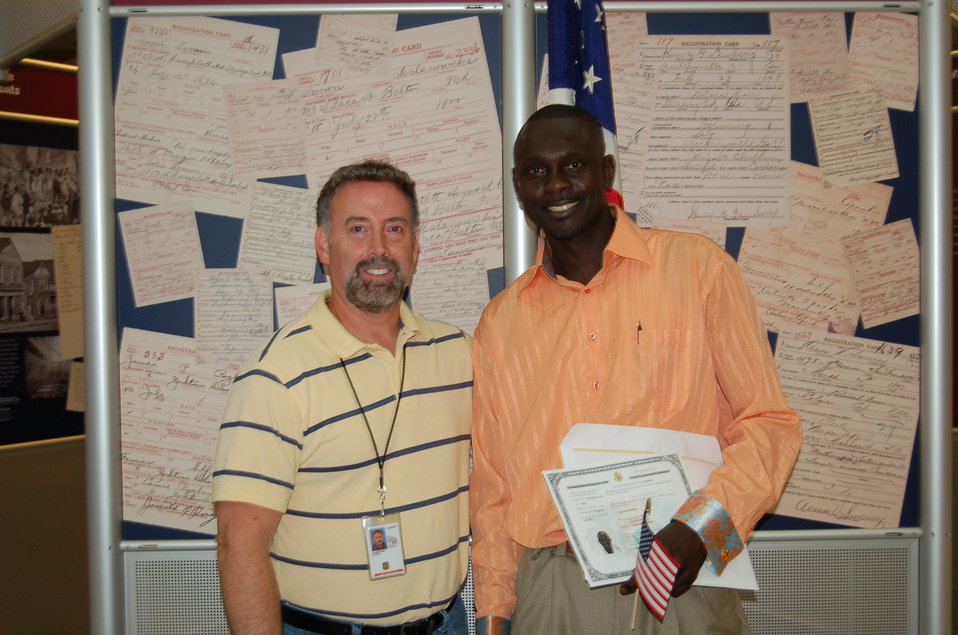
New Citizens